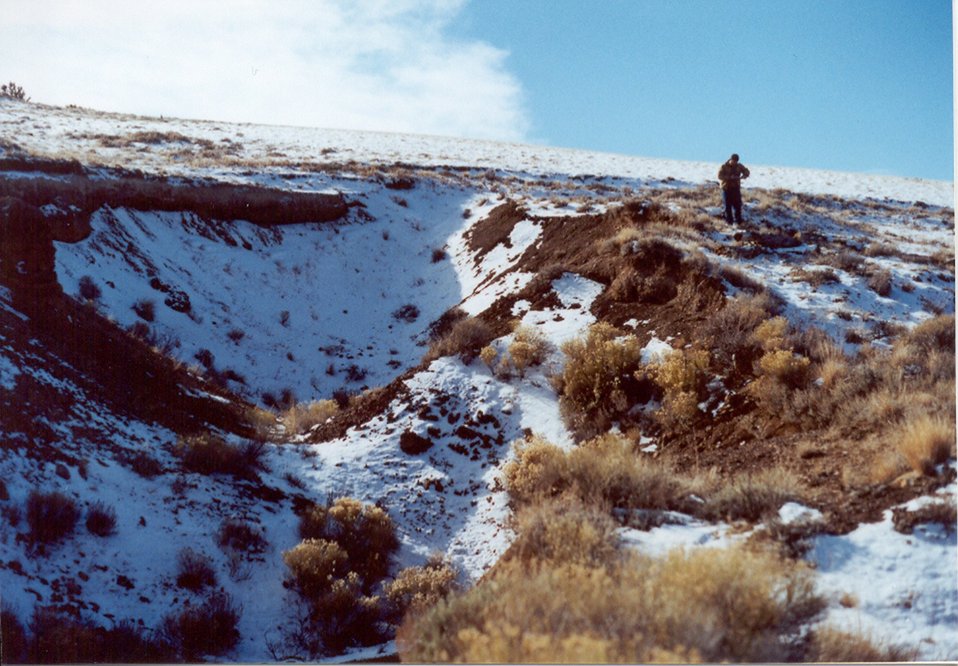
Abandoned Mine Salmon Field Office Upper Columbia Salmon Clearwater District UCSC